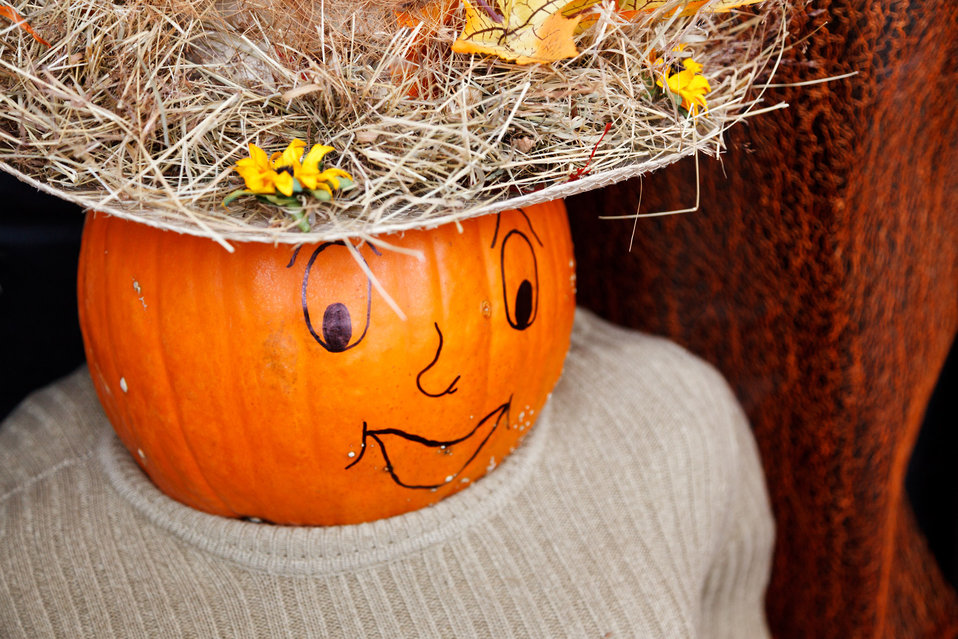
Pumpkin man

Autumn pumpkin man.